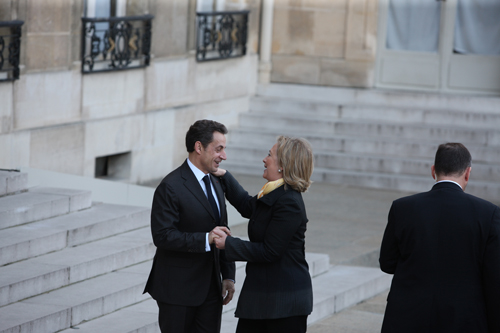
Secretary Clinton Is Greeted By French President Sarkozy

U.S. Secretary of State Hillary Rodham Clinton bids farewell to U.S. Ambassador to France, Charles H. Rivkin, and his wife, Mrs. Tolson, at Le Bourget Airport in Paris, France, on March 15, 2011.